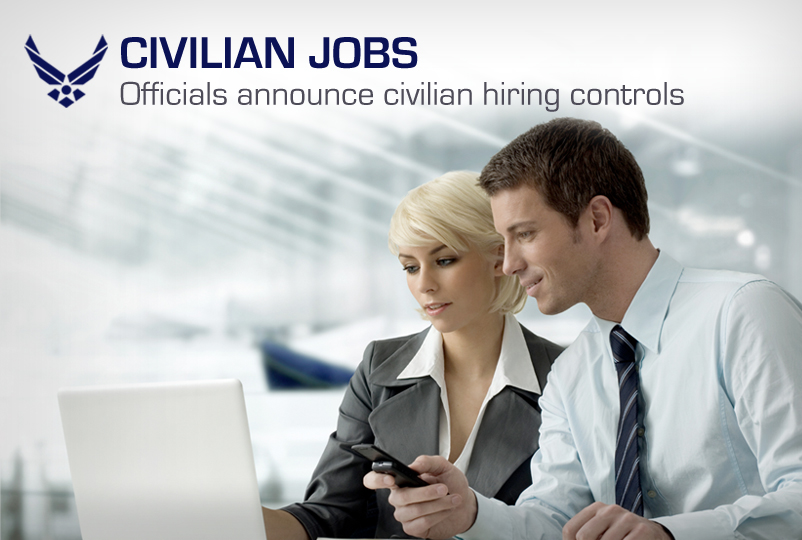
Civilian Jobs